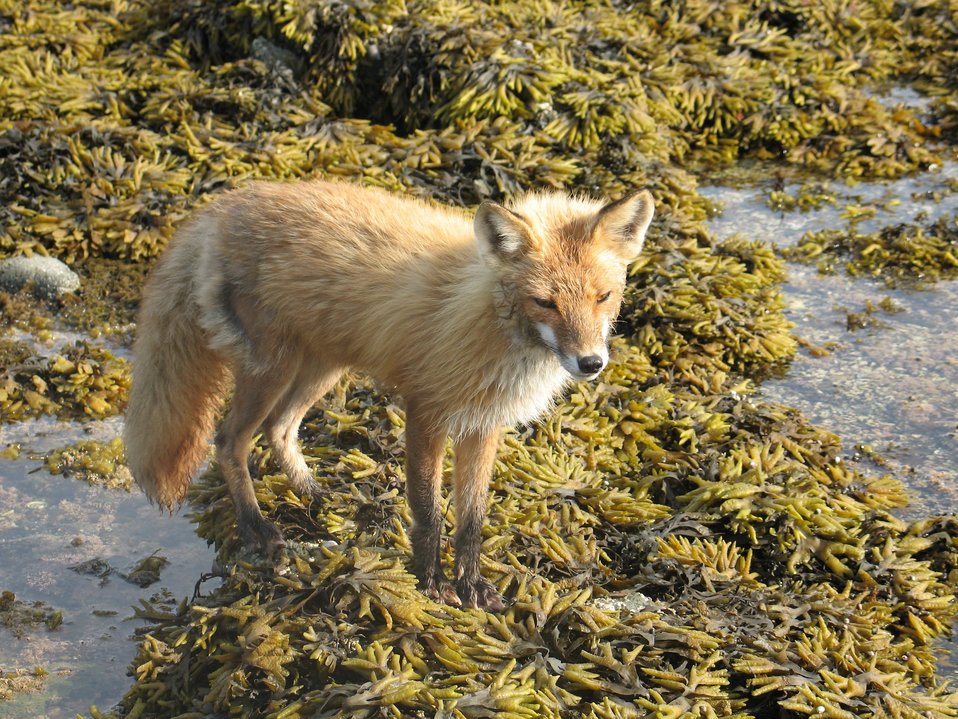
Fox looking for meal at low tide.